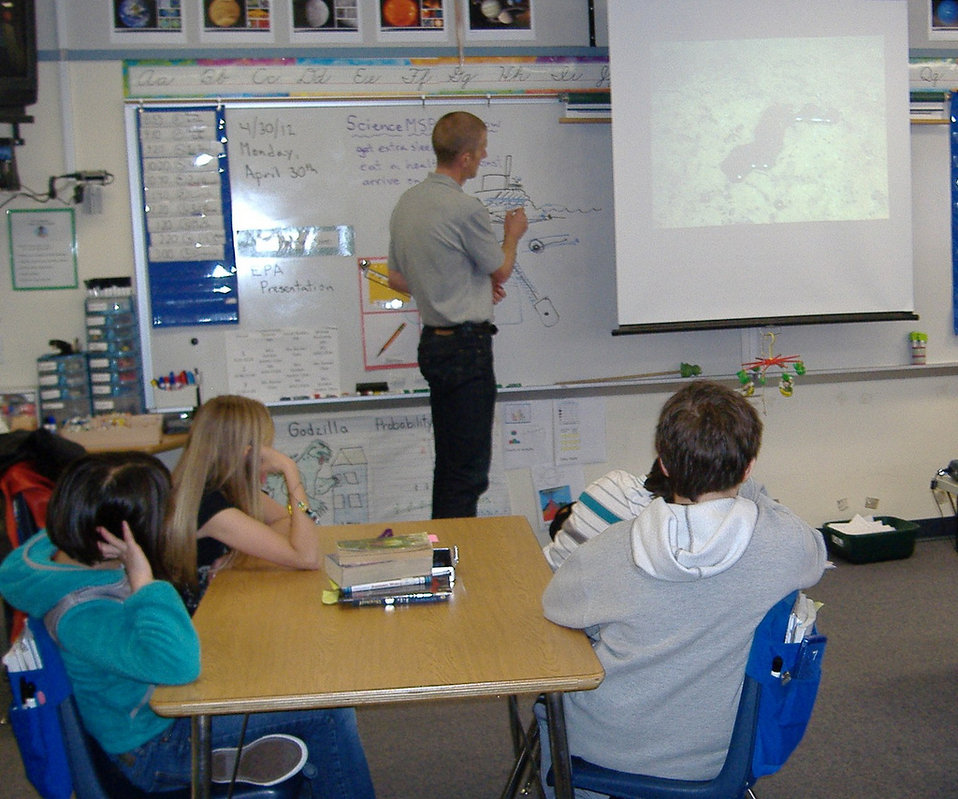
April, 2011 Dive presentation for Earth Day

EPA divers provide outreach to K-8 students in the greater Seattle area about ocean stewardship.

Presentations typically include pictures and video of creatures in Puget Sound as well as contaminated underwater sites to show how EPA uses scientific diving to help protect the ocean environment.

Students learn about what they can do to improve the health of Puget Sound and can see firsthand some of the equipment used by the EPA teams.

The presentations also talk about the importance of math and science in becoming a diver.